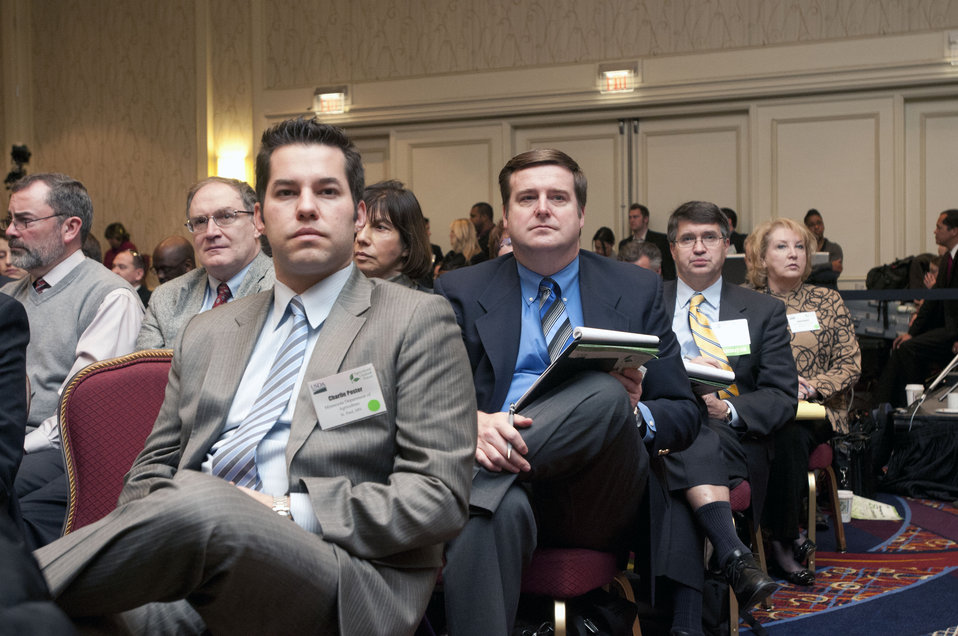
Audience members listen to speakers at the 2013 Agricultural Outlook Forum, in Arlington, VA. on Feb. 21, 2013.